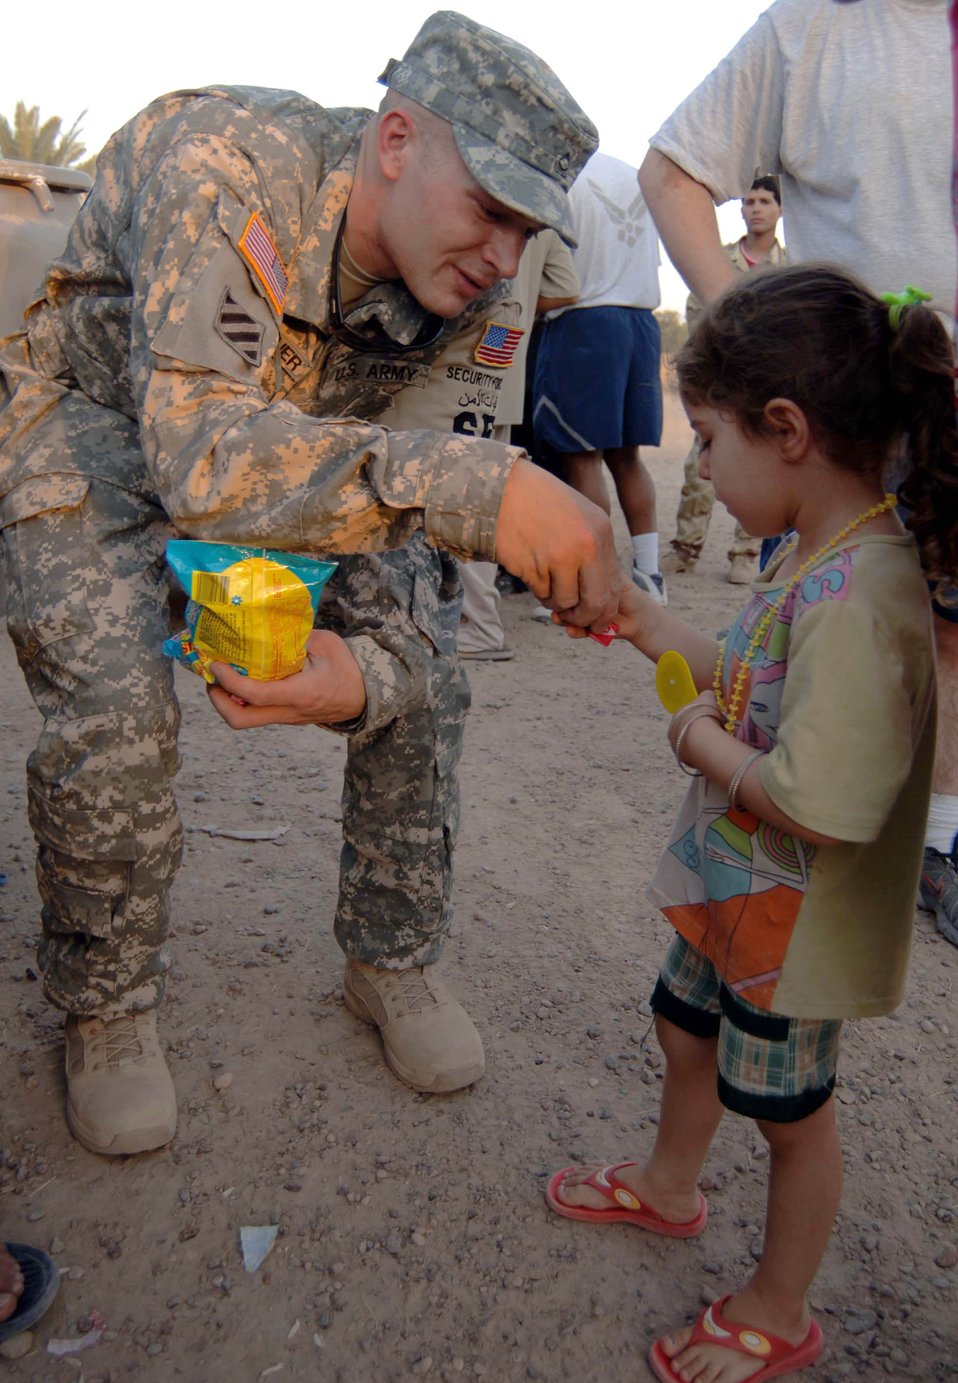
Airmen, Soldiers form relationships with Iraqi children

Army Pfc. Jeremy Breuckner offers candy to an Iraqi child at the Victory Base Complex in Iraq July 29. This was part of an Air Force effort to provided humanitarian aide to children of Iraqi soldiers. Other items passed out were school supplies, clothing and soccer balls. Private Breuckner is a 447th Expeditionary Security Forces Squadron patrolman.